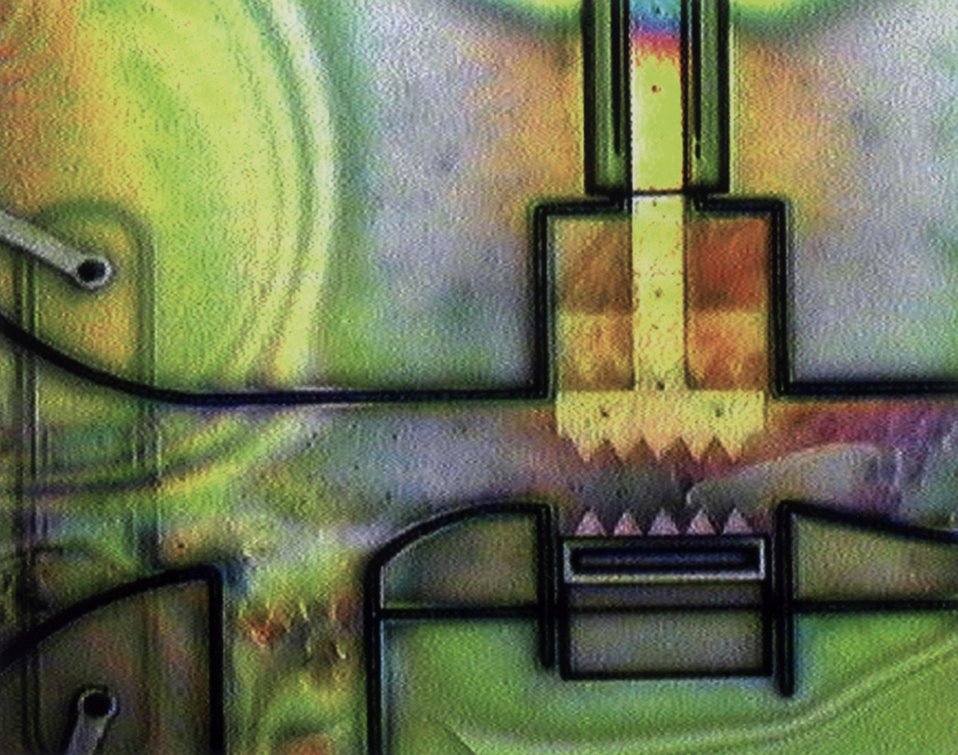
MECHANIZED MICROFLUIDIC DEVICE THAT MAY IMPACT GENETIC RESEARCH.

A MICROFLUIDIC DEVICE TYPICALLY CONSISTS OF THOUSANDS OF CHANNELS CONDUCTING TINY AMOUNTS OF FLUIDS FOR ANALYSIS. SANDIA DEVELOPED SILICON MICRO-TEETH THAT OPEN AND CLOSE LIKE JAWS. THE MICRO-JAWS FIT IN A MICRO-CHANNEL ABOUT ONE THIRD THE WIDTH OF A HUMAN HAIR. WHEN THE JAWS CLOSE, THEY TRAP A RED BLOOD CELL FOR ANALYSIS.